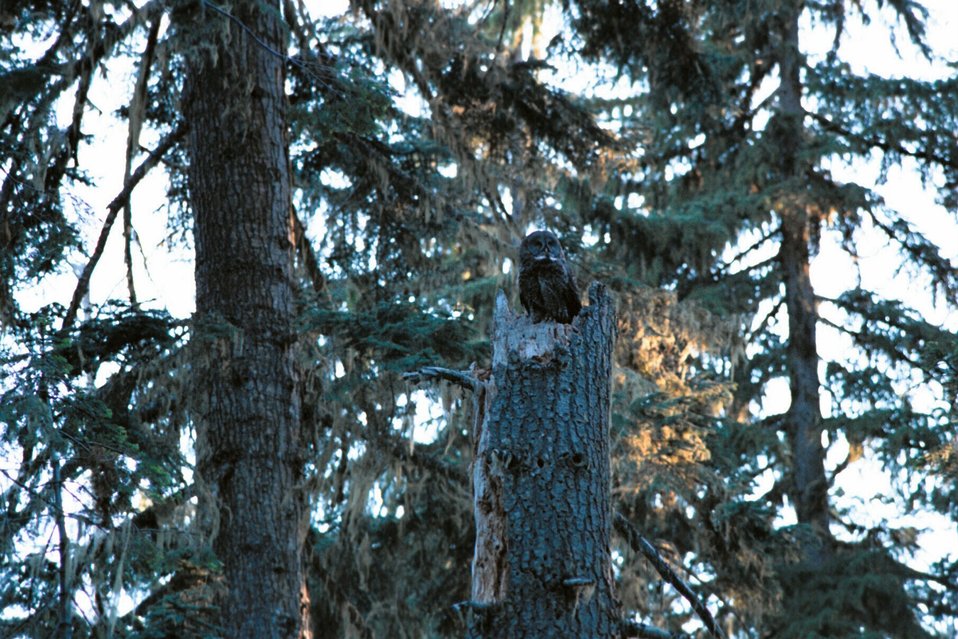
Great Grea Owl sitting on her nest. (Strix nebulosa)